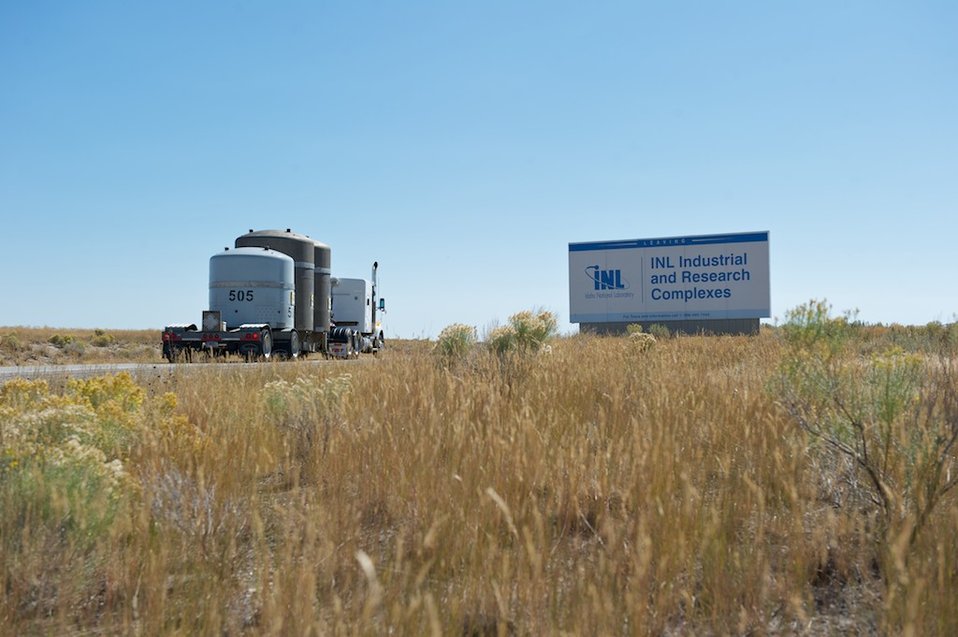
10,000th Shipment

The 10,000th shipment of TRU waste leaving Idaho bound for WIPP. The waste was shipped from the Advanced Mixed Waste Treatment Project.